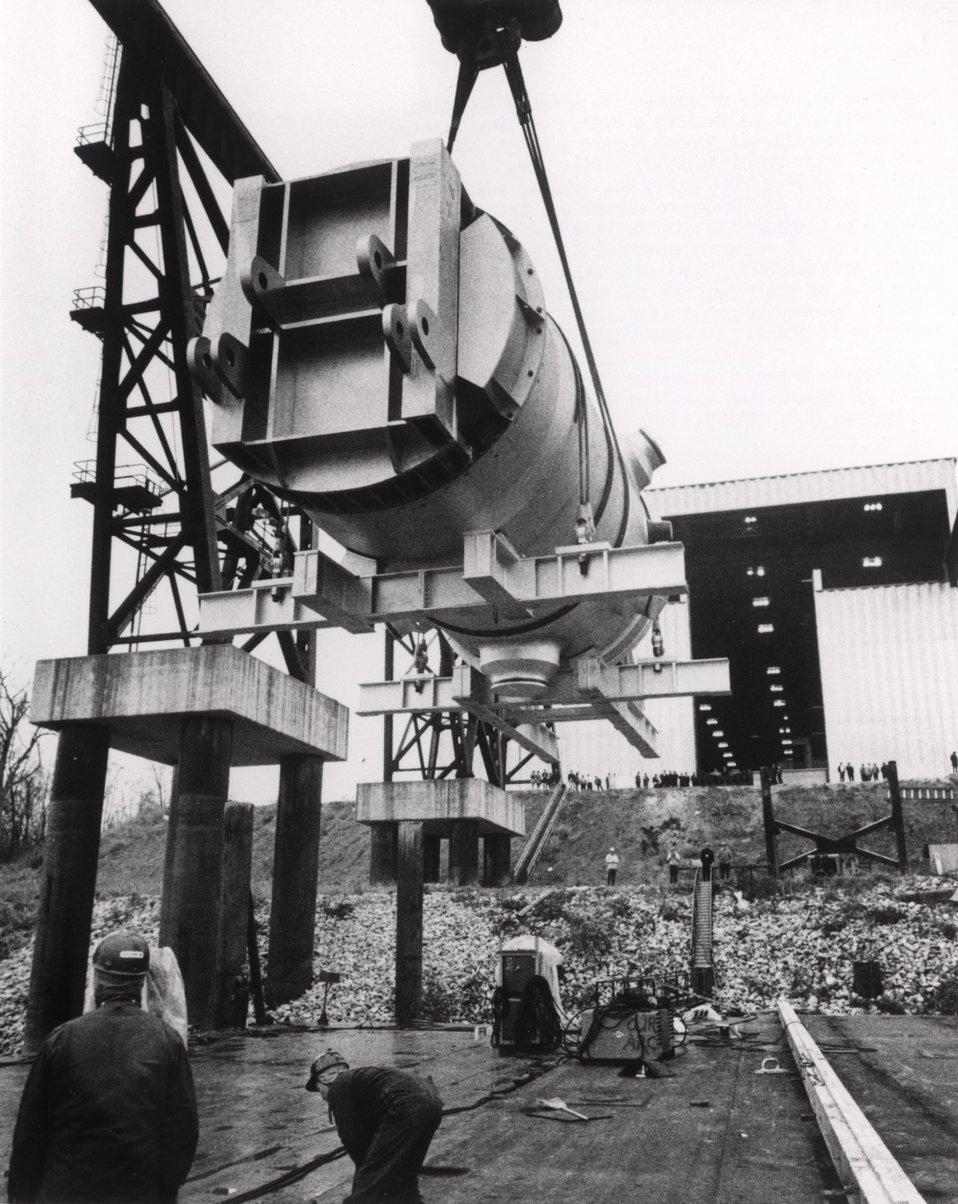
Beginning a journey of almost two month's duration, the first of three Babcock and Wilcox nuclear reactor pressure vessels was loaded aboard a specifically-constructed barge in early 1970. Circa 1972.